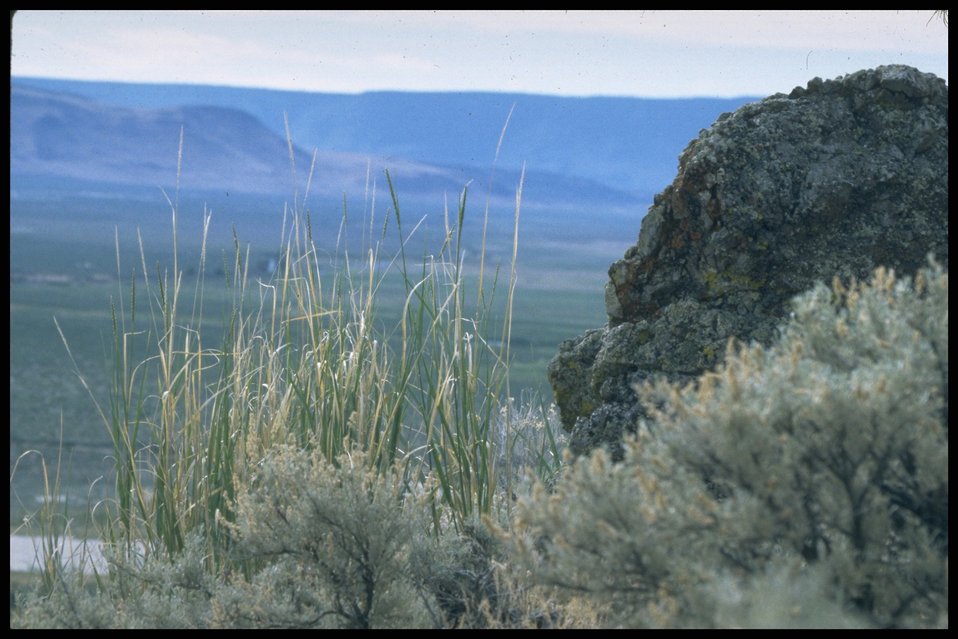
Scenic view from Abert Rim, Lakeview District.